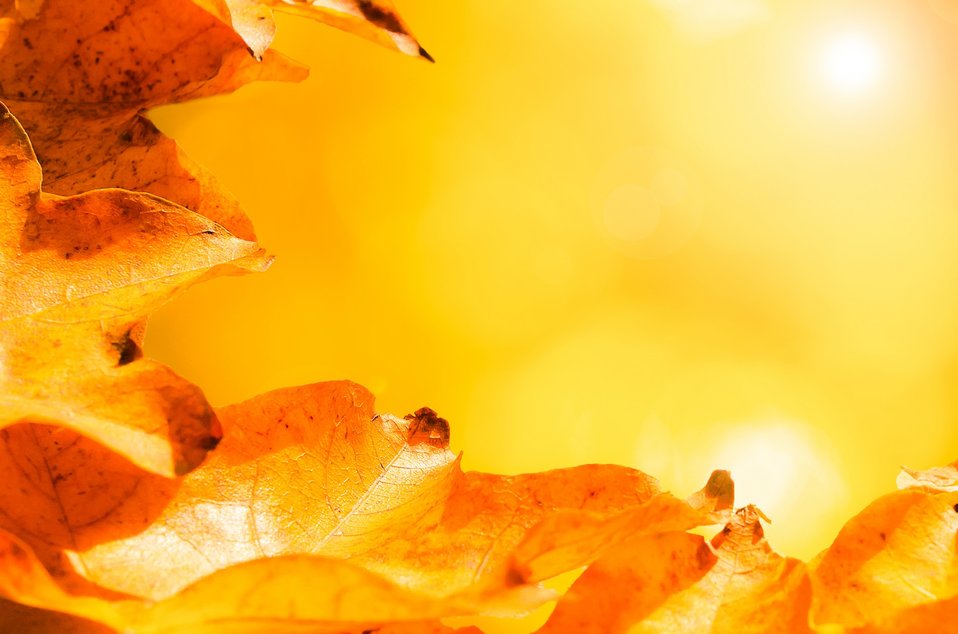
Autumn leaves background.